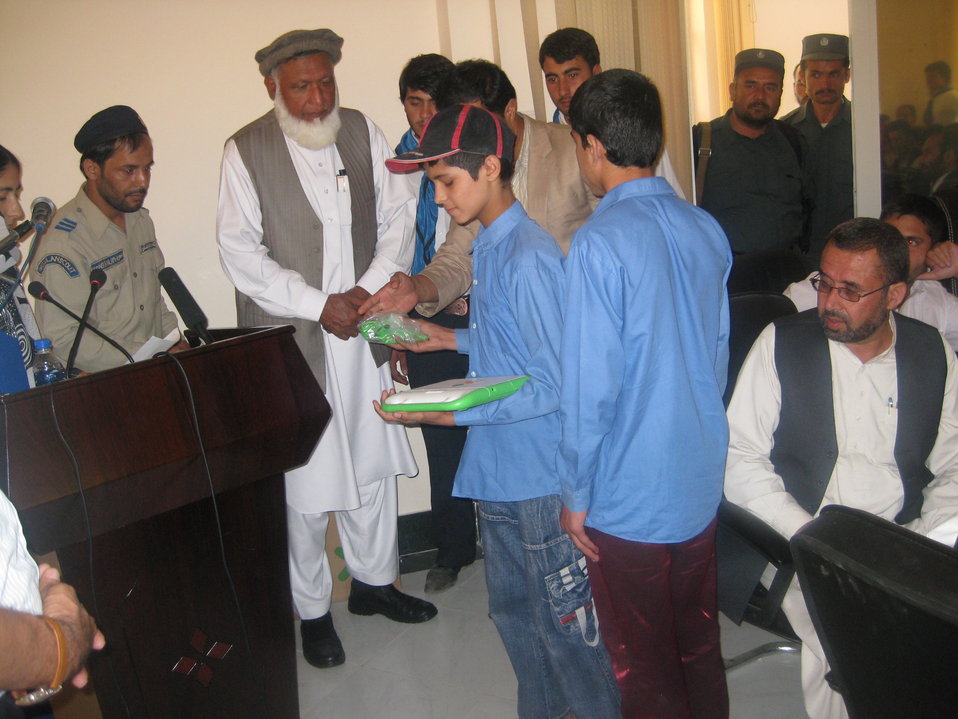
برنامه 'یک لپ تاپ برای هر طفل'، کمپیوتر های لپ تاّپ را در بغلان توزیع نمود